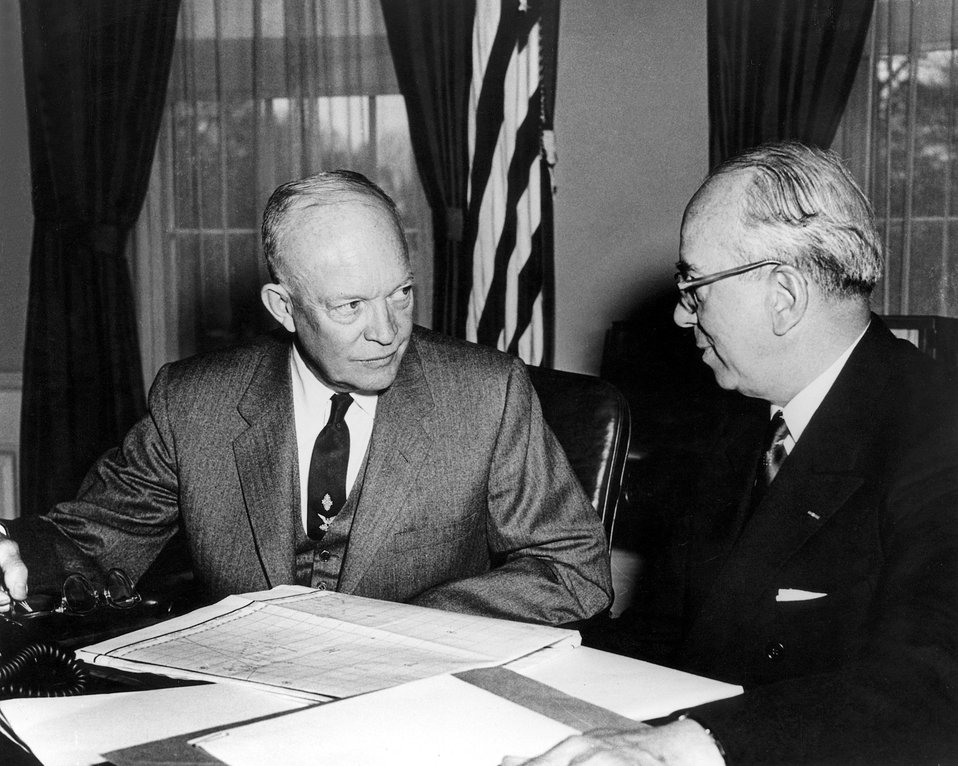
President Dwight D. Eisenhower receives a report from Lewis Strauss on Hydrogen Bomb tests in the Pacific, March 30, 1954.